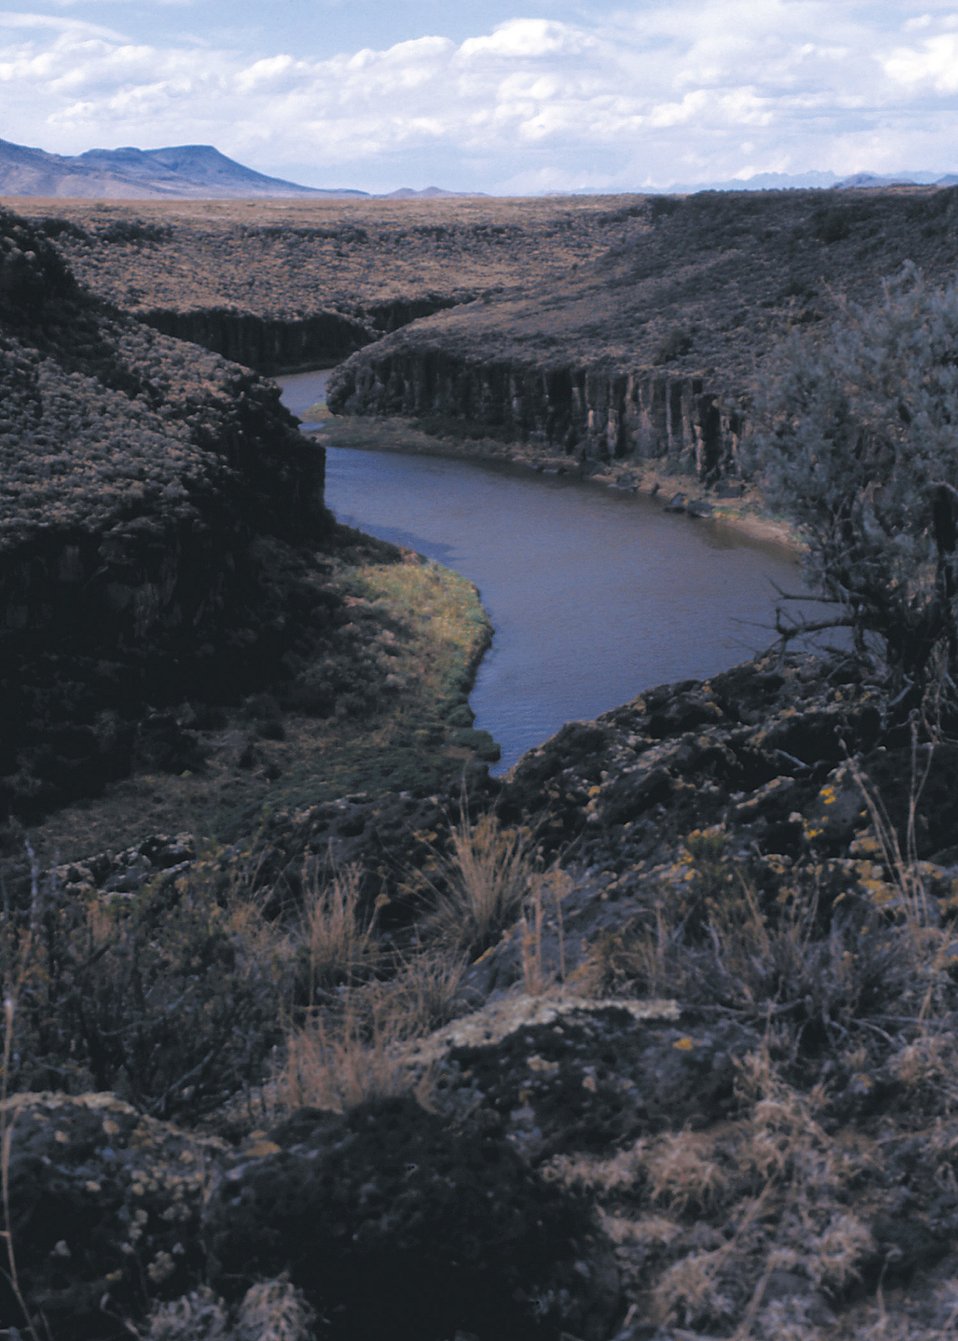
River Senic